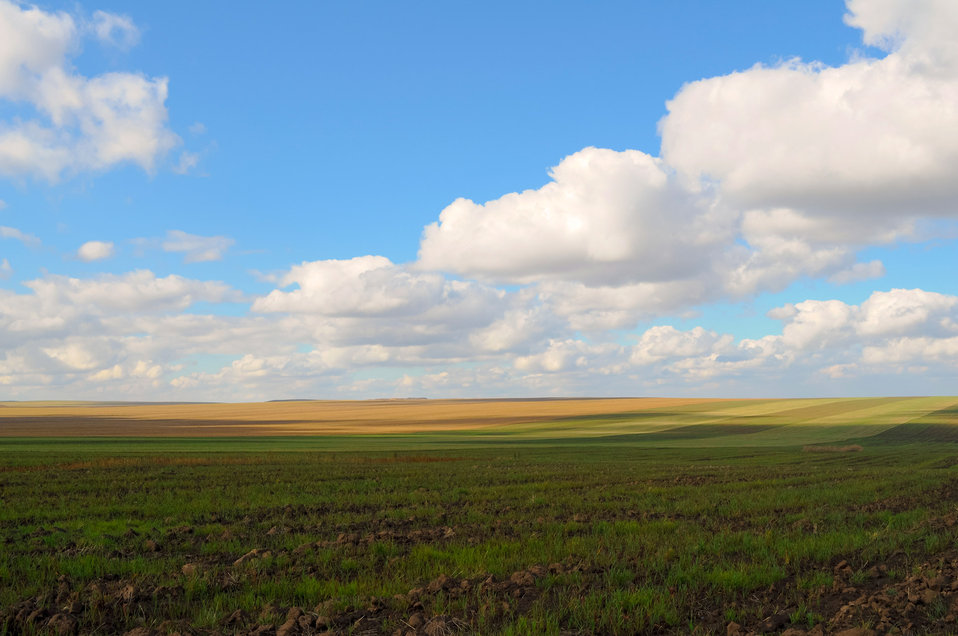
Rural field

Landscape with fallow field on a background beautiful sky.